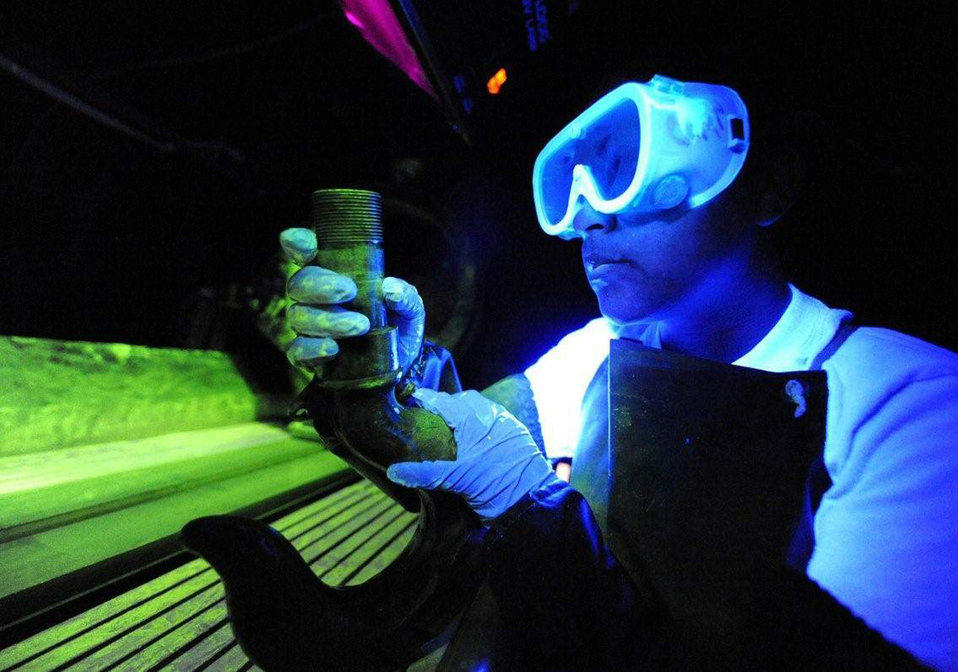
Photo essay: Taking a closer look

Senior Airman Lilia Linares uses a fluorescent magnetic particle process to inspect an aerospace ground equipment hook for cracks May 27 at Charleston Air Force Base, S.C. The nondestructive inspection section inspects more than 40,000 pieces of weapon systems and nonweapon systems assets a year. Airman Linares is a nondestructive inspection journeyman with the 437th Maintenance Squadron.